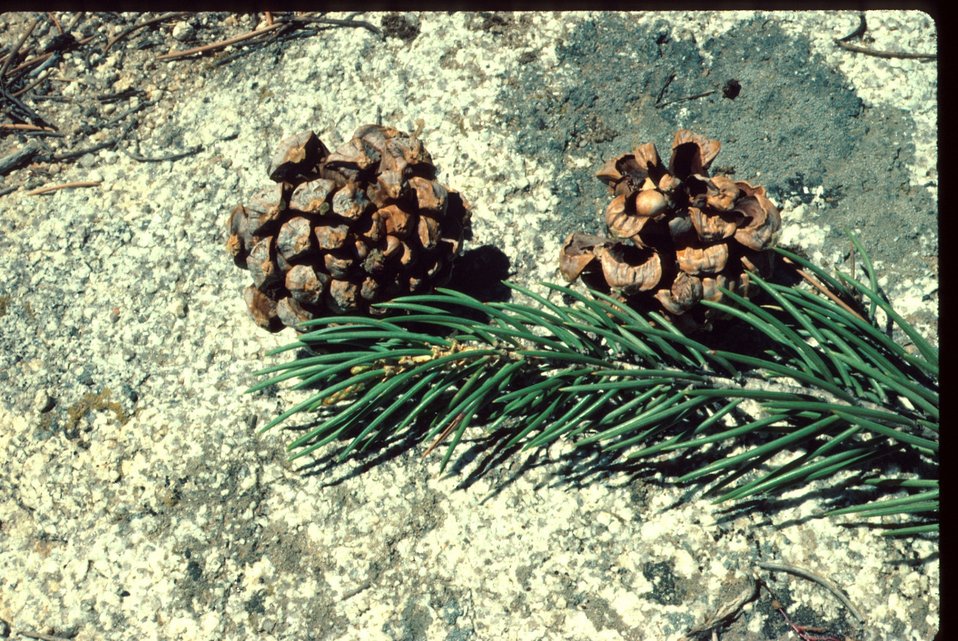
Pinus monophylia Pinyon Pine Trees